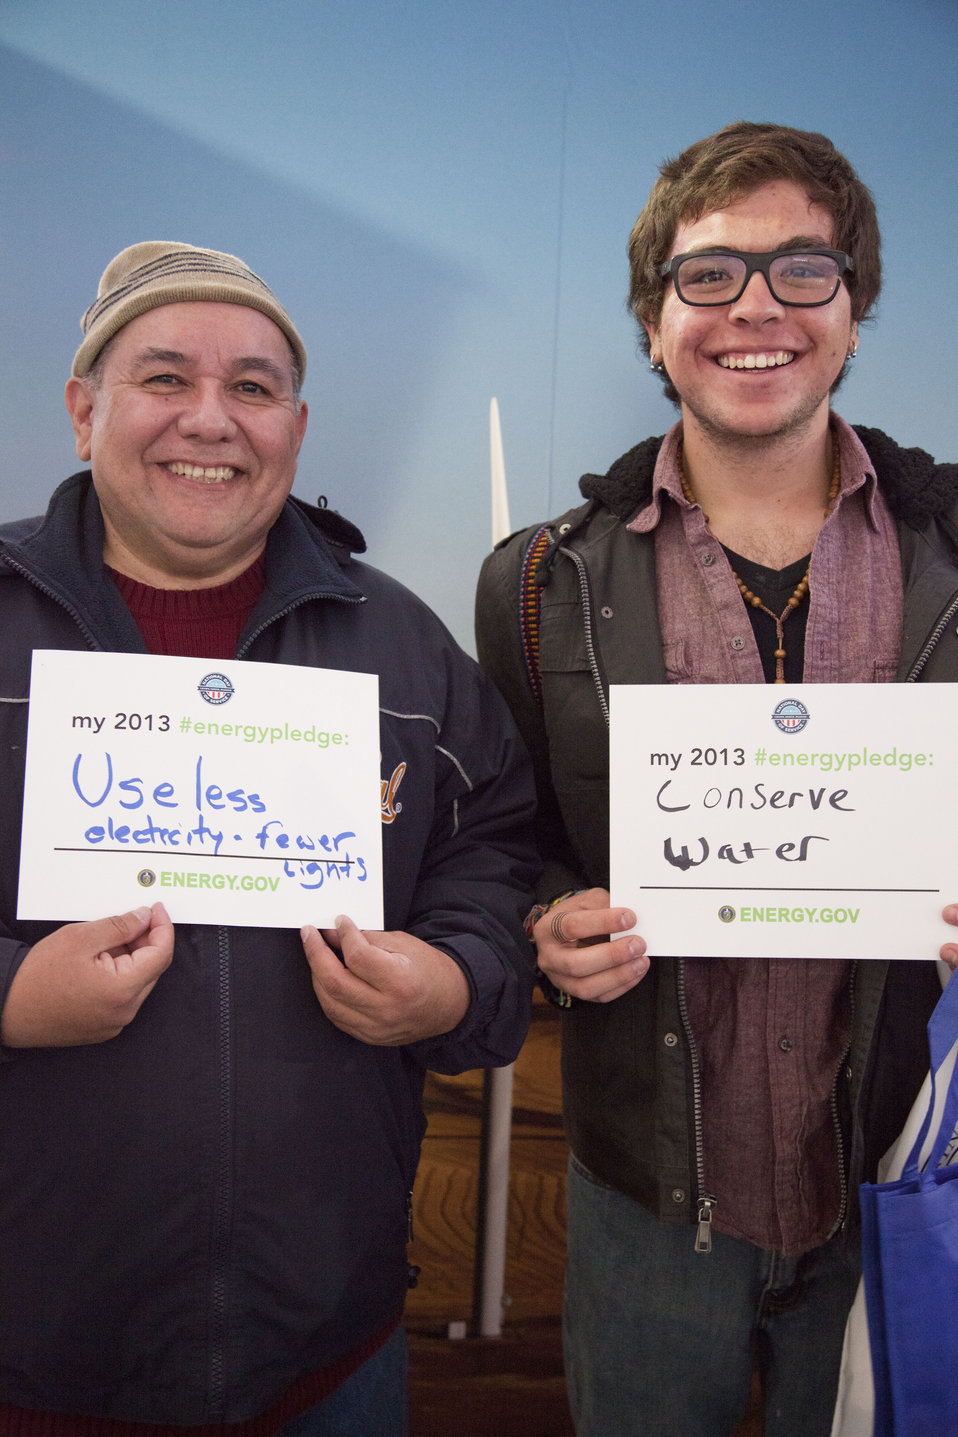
What's your #energypledge?